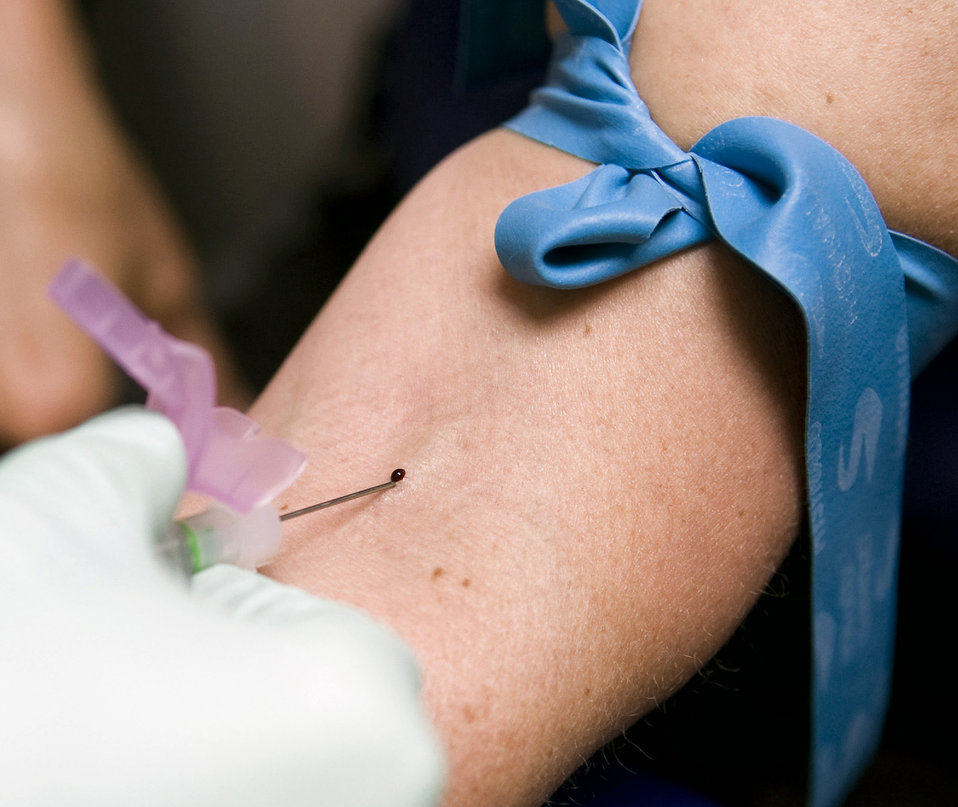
Blood work

Staff Sgt. Karla Workman draws blood from a patient March 4 at Eielson Air Force Base, Alaska. Routine chemistry and complete blood count labs are drawn from patients to ensure their blood is healthy. Sergeant Workman is a 354th Medical Group clinical lab technician.